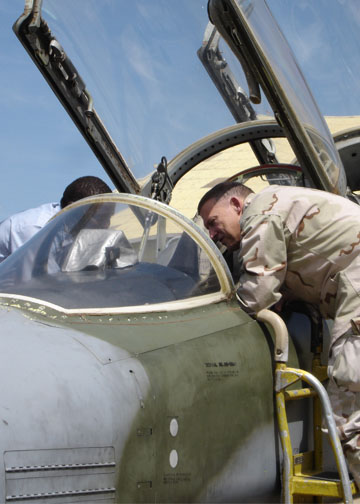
Leaders meet

Kenya Air Force Maj. Mbogua, an F-5 pilot, discusses aircraft avionics and weapons systems with Lt. Gen. Gary North, U.S. Central Command Air Forces commander, at Laikipia Air Base, Nairobi, Kenya, Feb. 8, as both peer into the cockpit of one of the service's F-5s. While in Kenya, General North also met with Brig. Gen. Jackson Waheru, deputy commander of the Kenya Air Force, to discuss current and future security cooperation efforts.